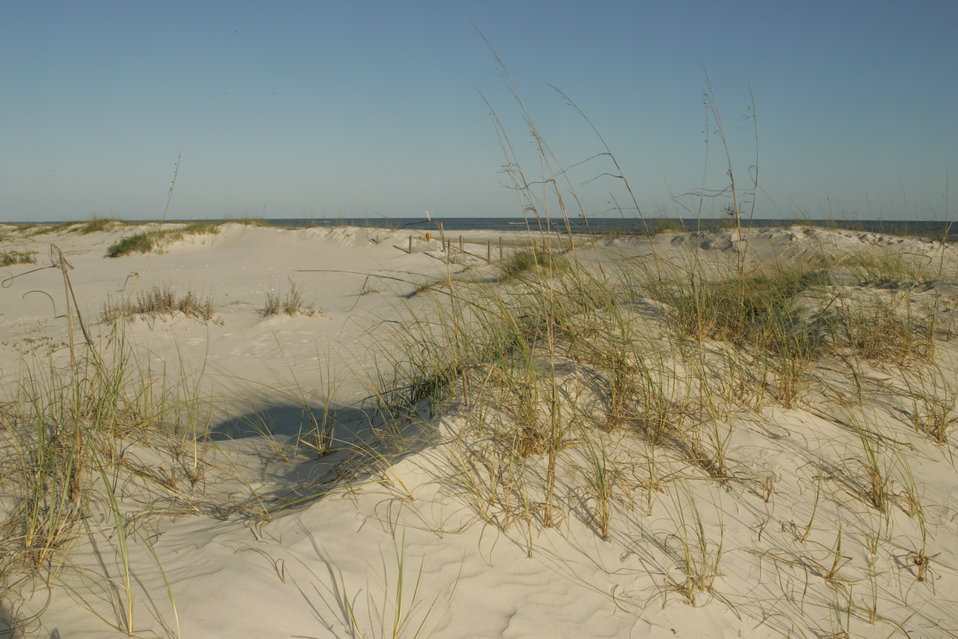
A natural setting by the beach.

Just a short walk to the ocean, the dunes lead the way.